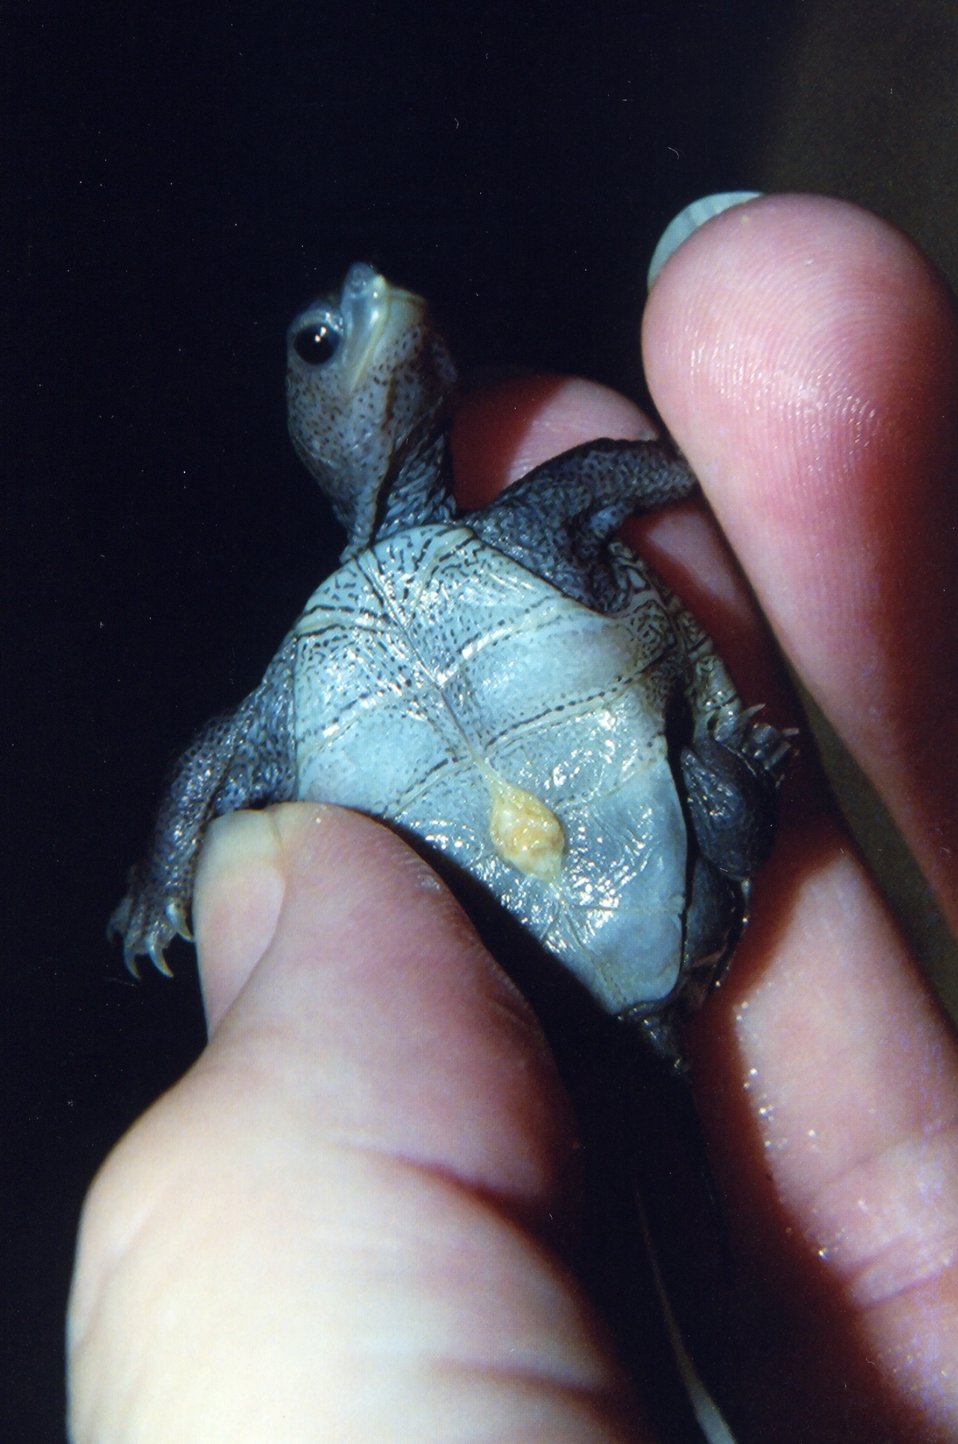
Newly hatched diamondback terrapin with egg sac and egg tooth.